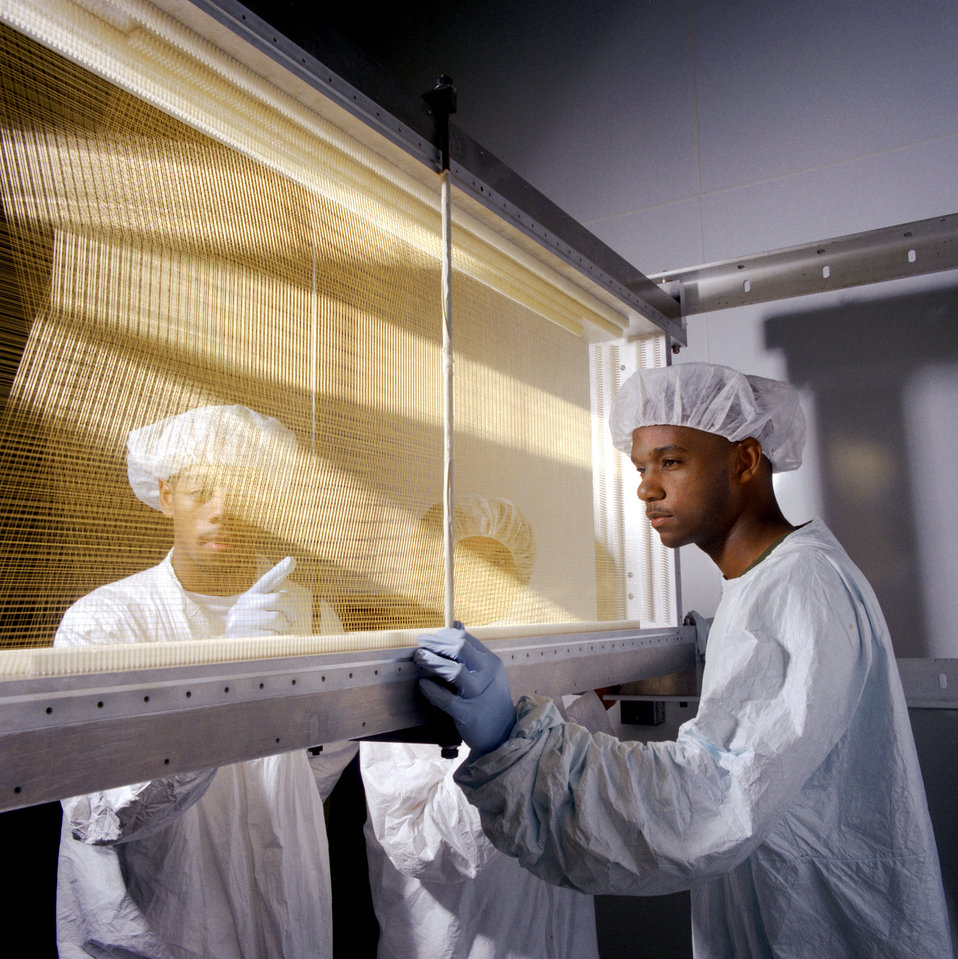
Jefferson Lab Thomas Jefferson National Accelerator Facility, in Virginia

92-744 DOE photo by Lynn Freeny 1992